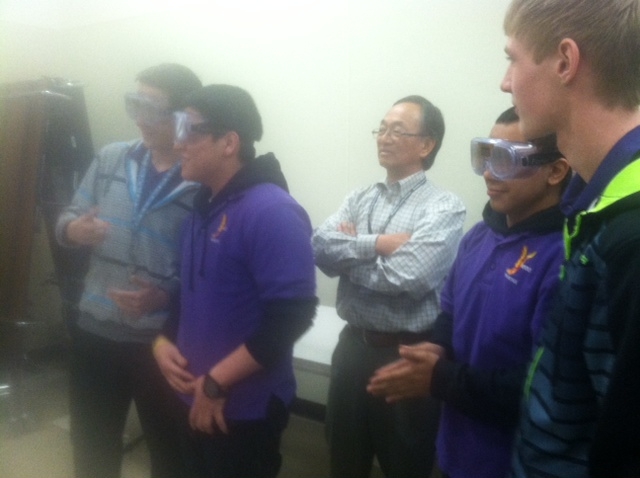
NDFW Event at Mt. Harrison High School

South Central Public Health provided activities at Mt. Harrison High School during NIDA's National Drug Facts Week in Heyburn, Idaho.
Teenagers from Mt. Harrison High School joined forces with other teens and scientists across the United States as part of the event.